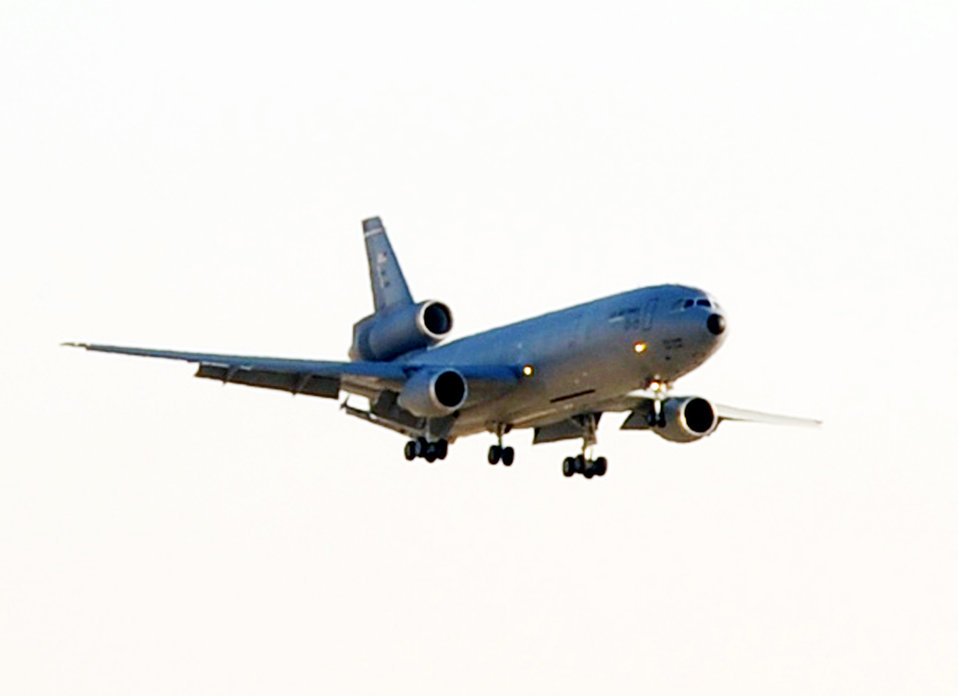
KC-10s keep aircraft flying in Southwest Asia

A KC-10 Extender comes in for a landing at an air base in Southwest Asia Jan. 6, 2010, after completing a combat air refueling mission. This KC-10 is assigned to the 908th Expeditionary Air Refueling Squadron of the 380th Air Expeditionary Wing.